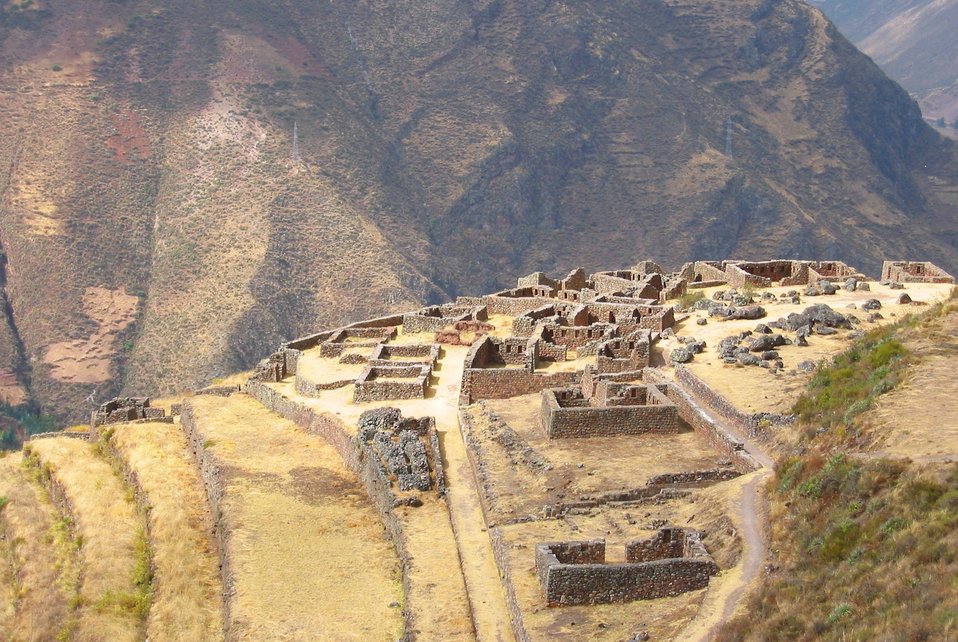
Q'Allaqasa ruins with terraces below at Písac, Peru. en:Commons:Category:Pisac